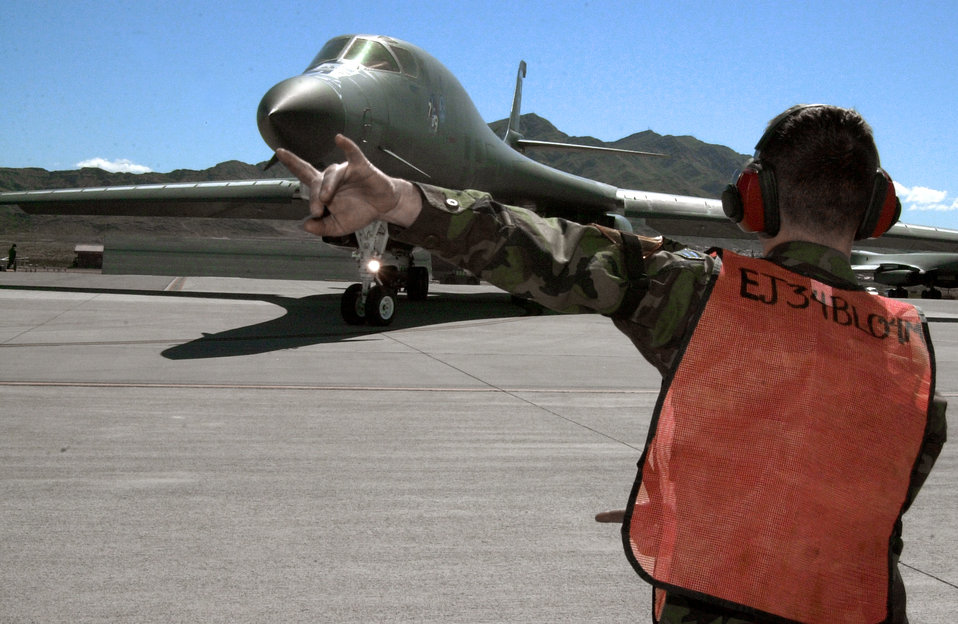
Flying the flag

NELLIS AIR FORCE BASE, Nev. -- Airman 1st Class Thomas Feenstra marshalls a B-1B Lancer here. About 10,000 U.S. and coalition forces are participating in the Joint Red Flag exercise, which runs through April 2. Airman Feenstra is from the 34th Bomb Squadron at Ellsworth Air Force Base, S.D.